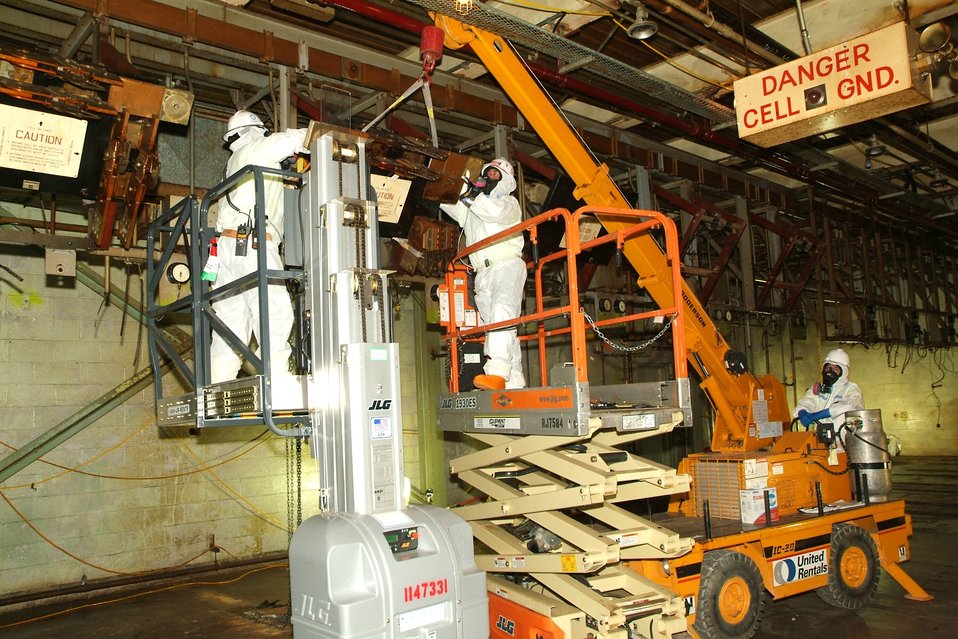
Recovery Workers Save Money, Time in Paducah Site Demolitions

Having saved millions of dollars cleaning up and tearing down an old smelter in September 2010, Recovery Act workers at the Paducah Site are moving on to demolish other closed facilities by September 2011.